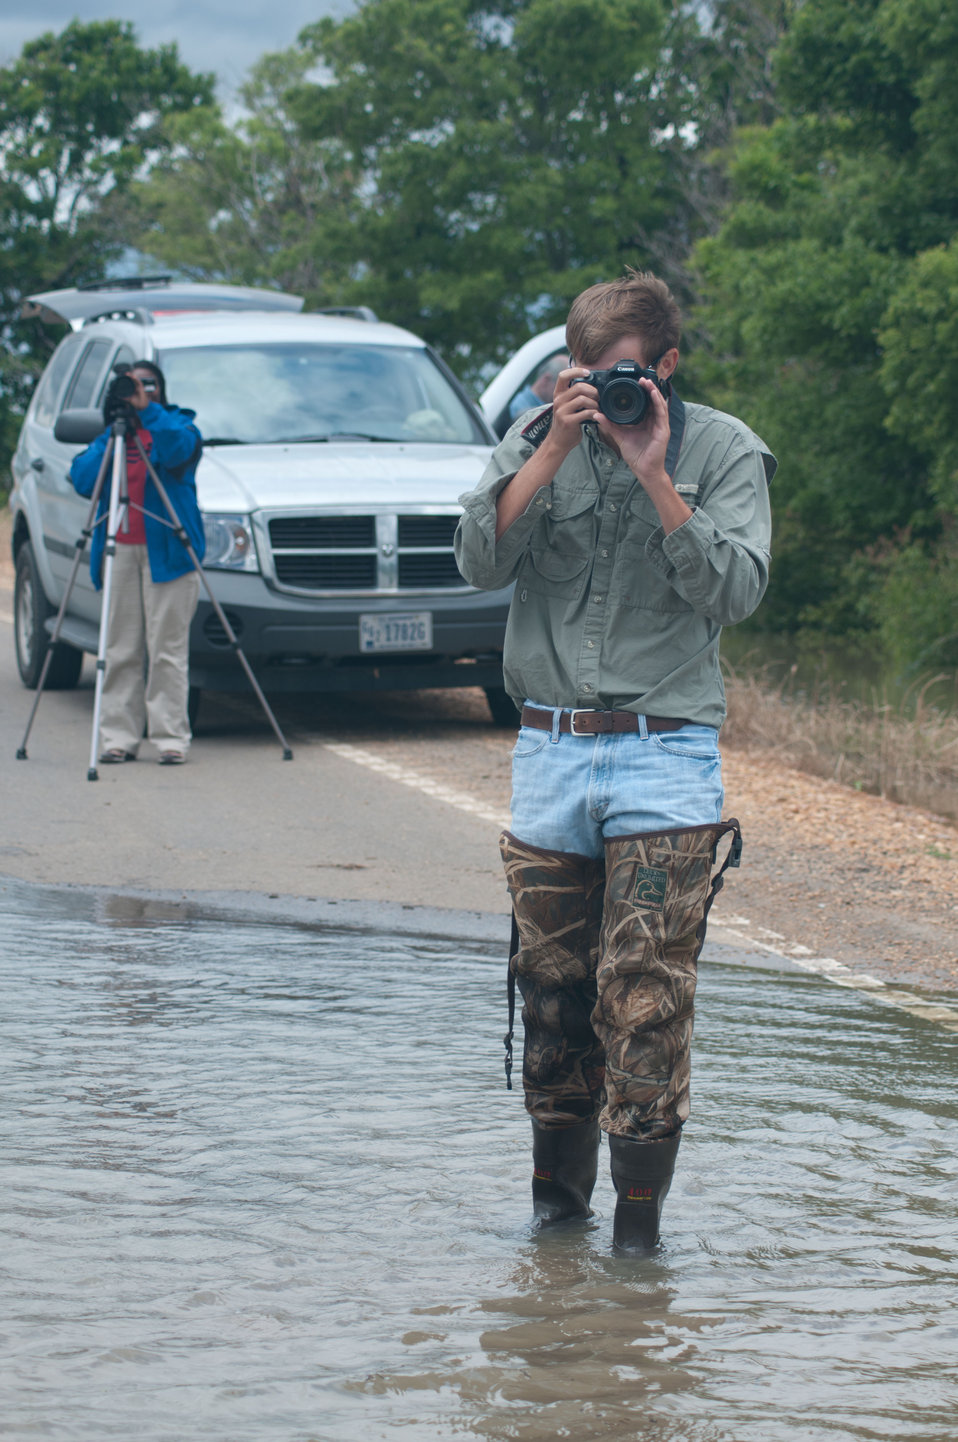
U.S. Department of Agriculture Media Specialist Laura Anderson (left) and writer Justin Fritscher (right) document the Mississippi River floodwaters that have pushed into the Yazoo River and into these corn and wheat fields in Satartia, MS, on Monday, May 16. 2011. The water crests the roadways closing them down.